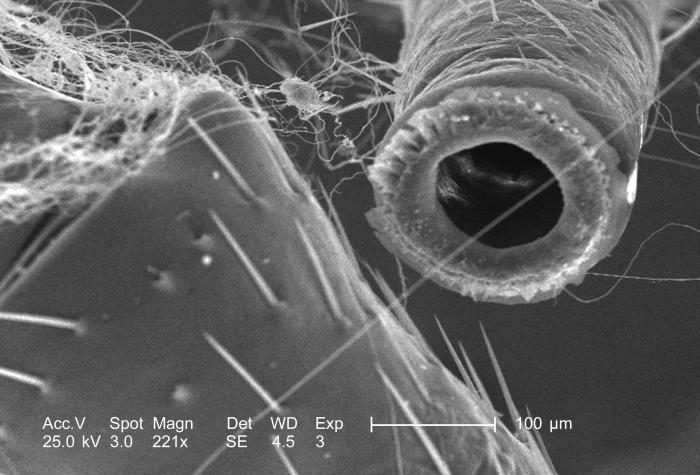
Included in this scanning electron micrographic (SEM) view, magnified 221x, were aspects of the antenna, and jointed leg of an unidentified dragonfly that had been found deceased on the grounds of the Decatur, Georgia suburbs. Note what appears to be the 'hollowed-out' antenna, the end of which had been broken off. When it was alive, this now empty lumen would have been filled with the dragonfly's blood, which is known as hemolymph, and soft tissues including nerves and muscles that had dried up after the organism's demise.